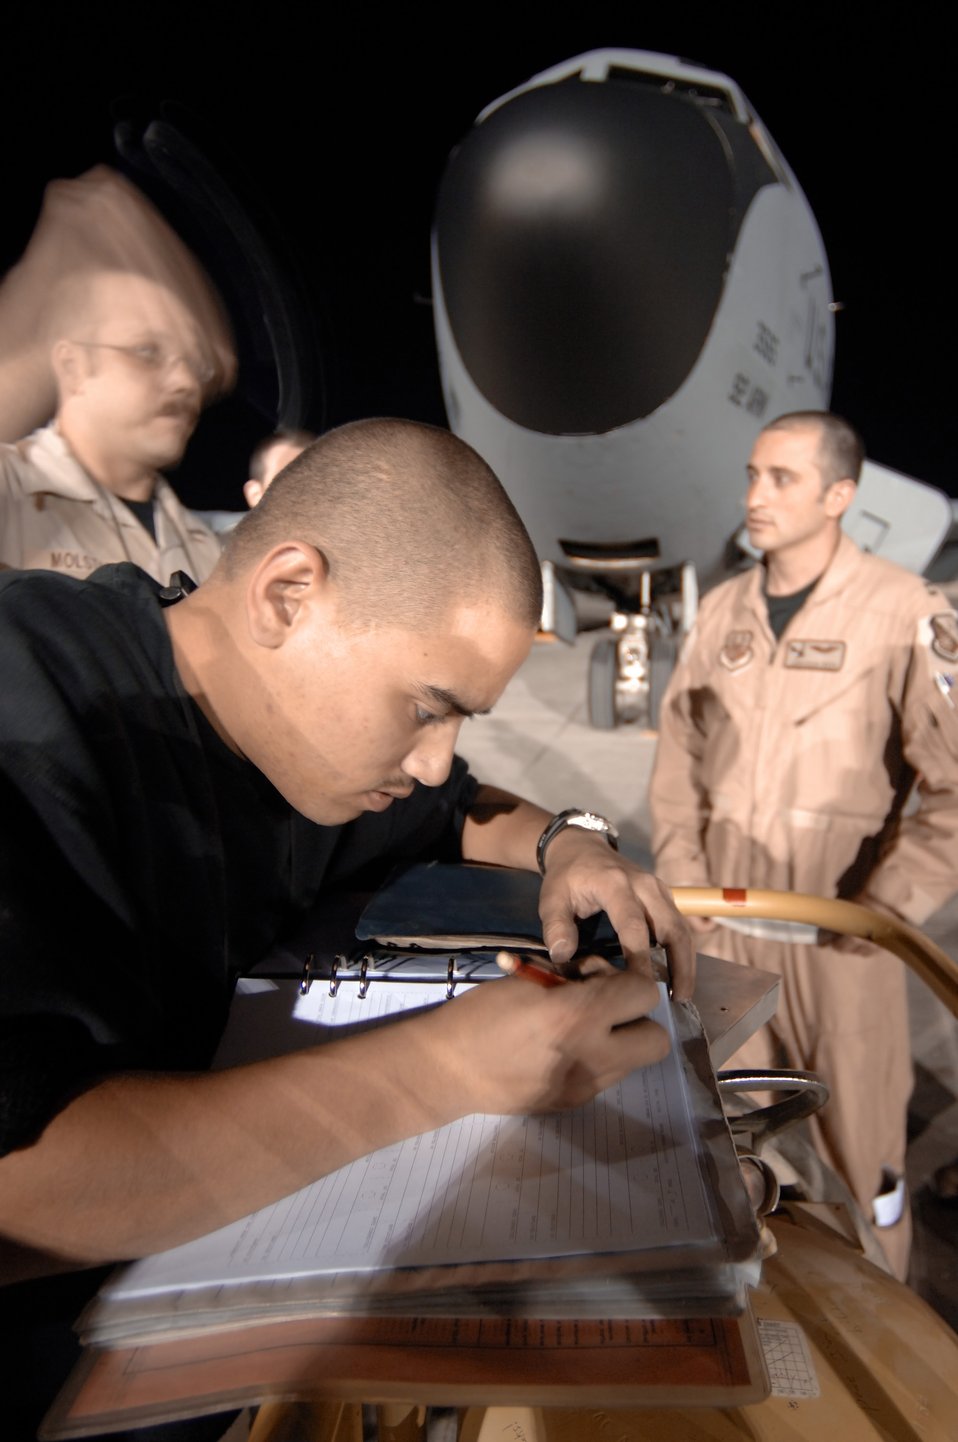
Tanker pride

SOUTHWEST ASIA (AFPN) -- Senior Airman Adam Pham updates a KC-135 Stratotanker maintenance logbook. Airman Pham is deployed with the 379th Expeditionary Maintenance Squadron.